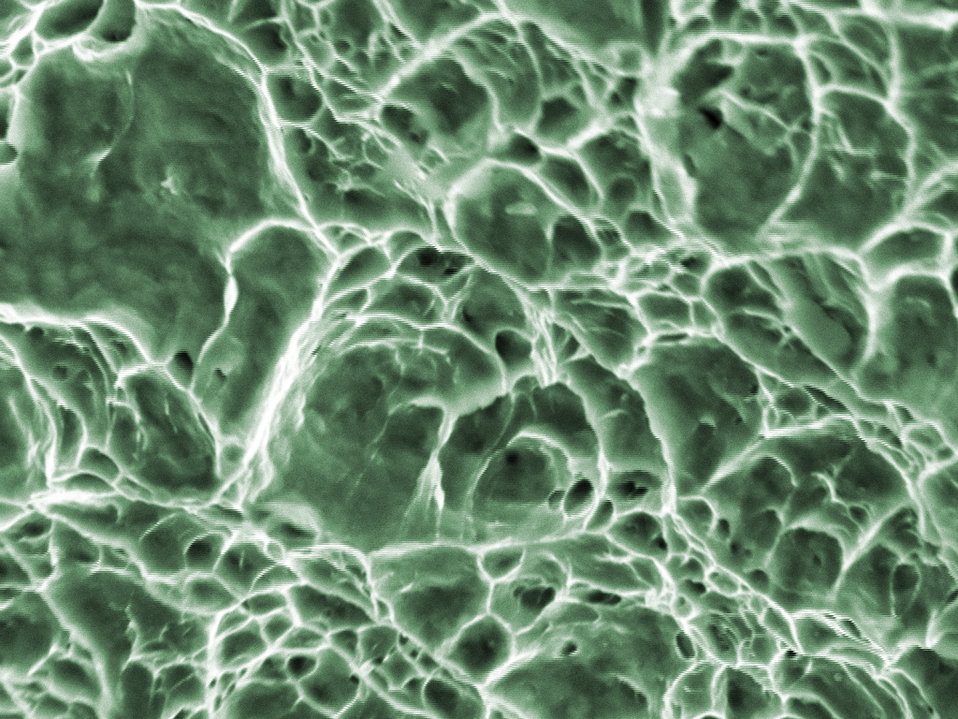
Ductile failure in pipeline steel

Scanning electron microscope images of a test section of X100 alloy pipeline steel shows the effects of ductile (stretching deformation) failure towards the center of the specimen. Image shows an area roughly 21.5 micrometers across. Color added for clarity.